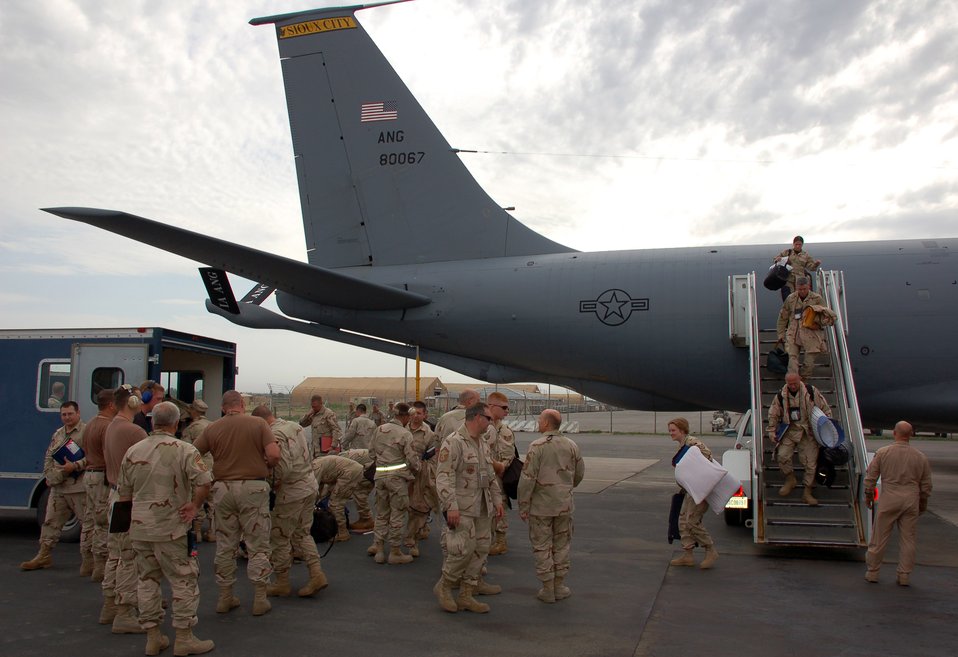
Manas soars with total-force operations

Members of the 185th Air Refueling Wing of the Iowa Air National Guard arrive May 31 to Manas Air Base, Kyrgyzstan. The Air National Guard crews and maintenance teams will work alongside active-duty Airmen as an integrated team.